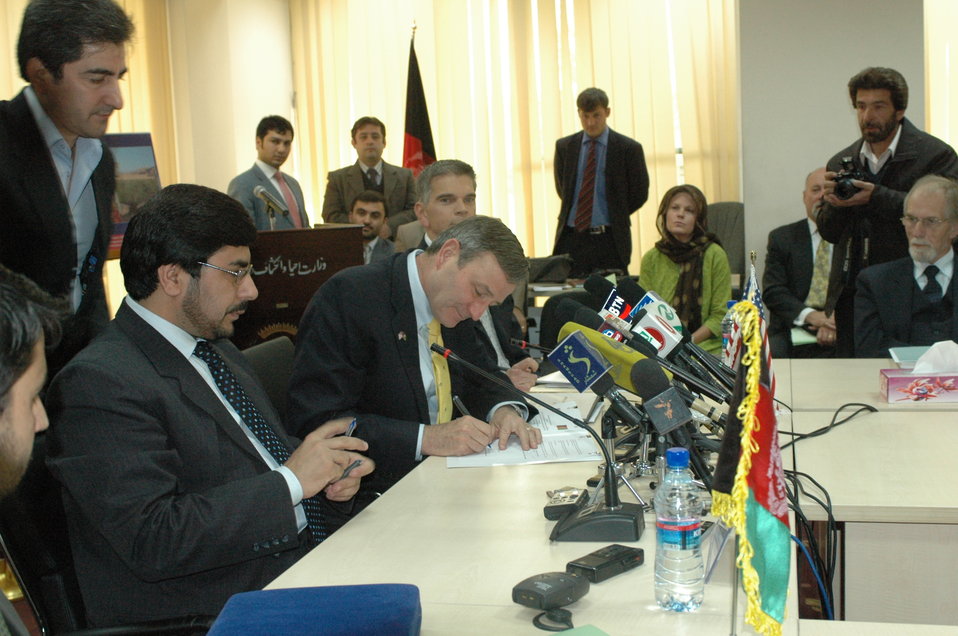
Community Based Stabilization Grants Ceremony, December 7, 2010